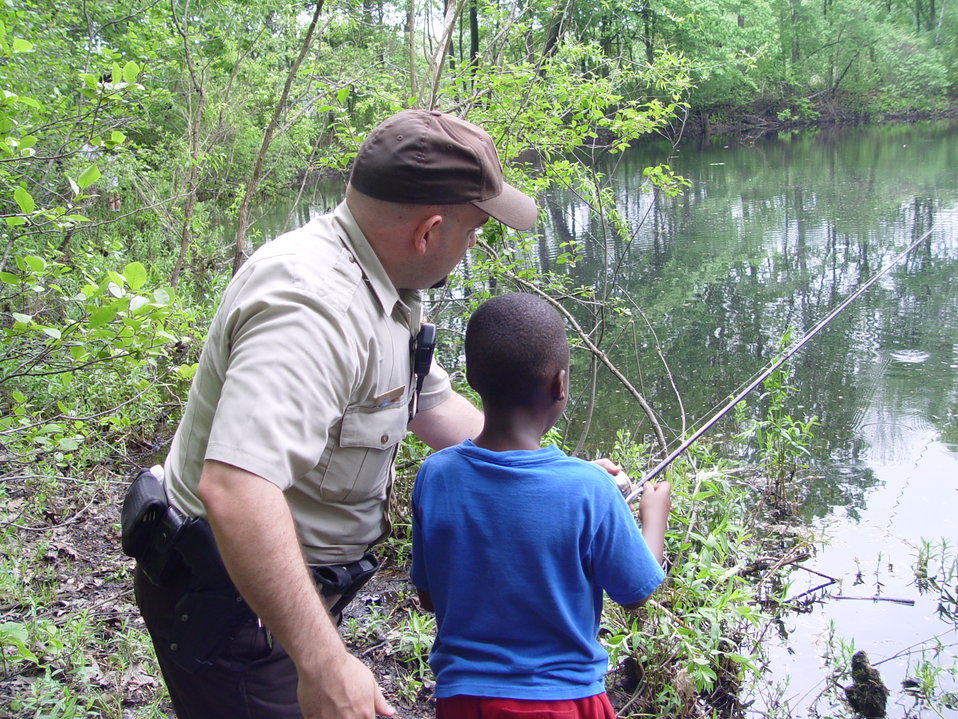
Great Meadows Fishing Day 2010

Great Meadows National Wildlife Refuge in Massachusetts holds an annual fishing day where all anglers -- beginners and experienced -- join refuge staff and other experts for a day filled with fishy fun!

Visitors learn how to fly-cast, spin-cast, and even tie your own fly. All equipment and instruction is provided, and there are always games, crafts, music and face painting as well.